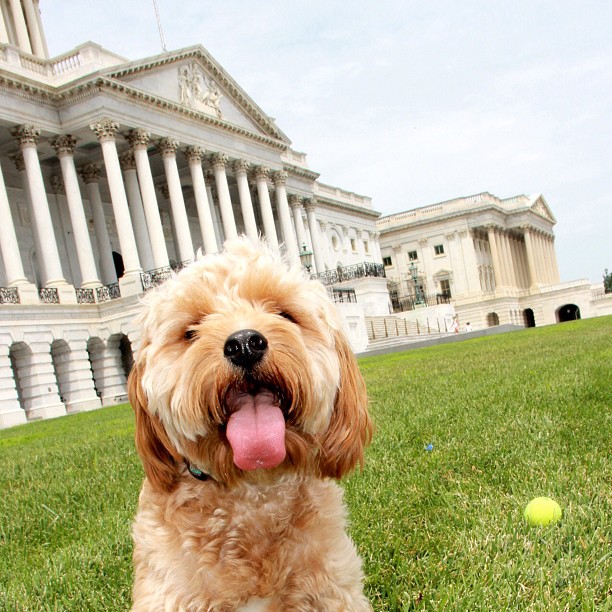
Welcome to August in #dc. Are you ready for the 'dog days' of summer?